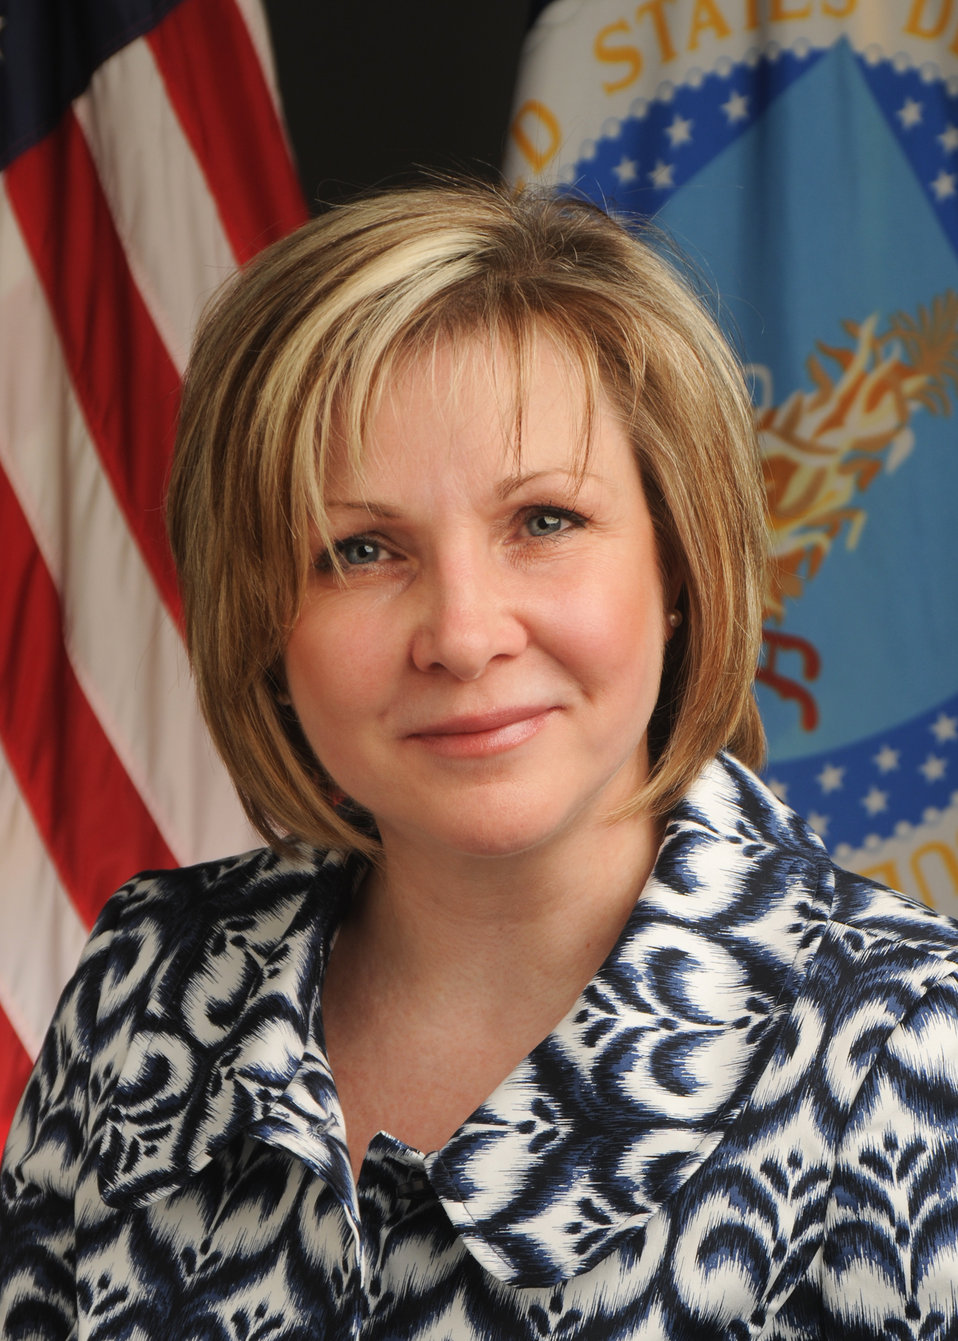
10di1038-008 Associate Chief National Resources and Conservation Service Virginia Murphy

Associate Chief of the National Resources and Conservation Service Virginia Murphy.